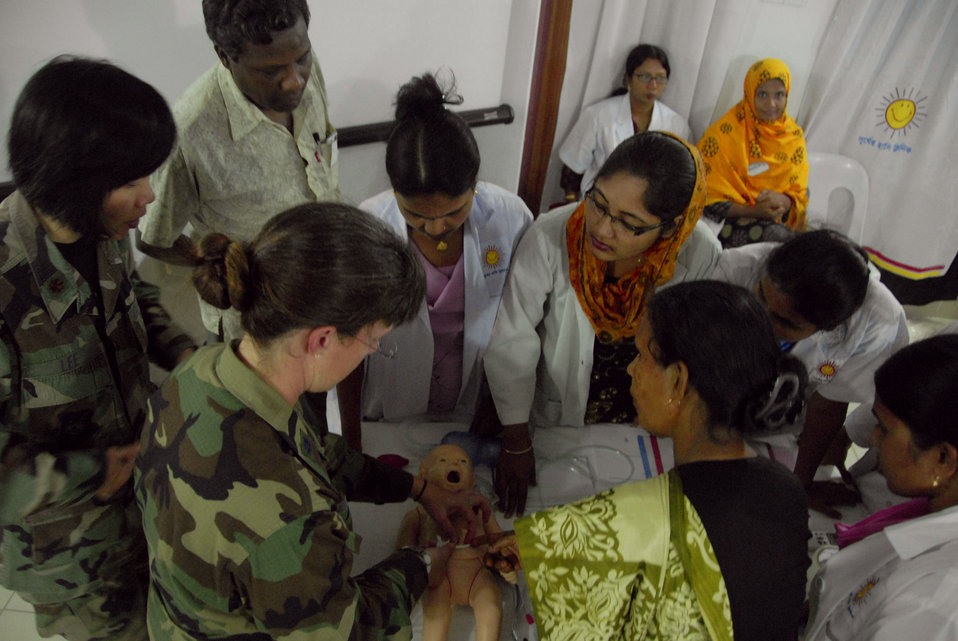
Neonatal care

Lt. Col. Lindy Winter demonstrates procedures on an infant's umbilical cord with Bangladeshi health care providers during a subject matter expert exchange June 12, 2010, at the Smiling Sun Clinic in Jessore, Bangladesh. Colonel Winter is the chief of neonatology at the U.S. Naval Hospital on Camp Lester in Okinawa, Japan.